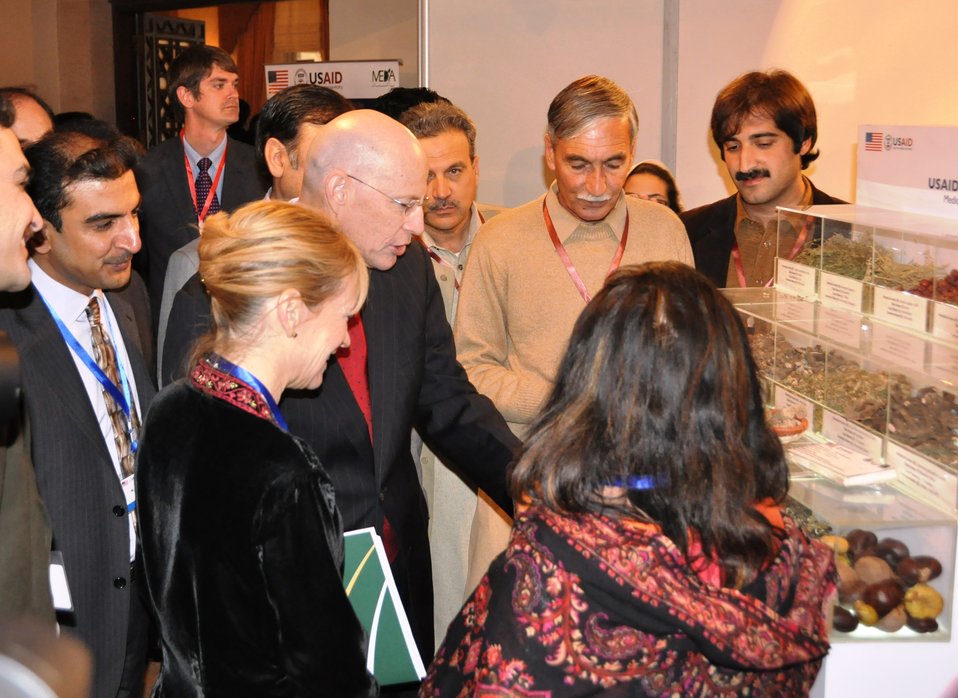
Industry Conference on Medicinal and Aromatic Plants and Honey by Entrepreneurs Project

USAID’s Mission Director, Gregory Gottlieb while interacting with Project beneficiaries of Medicinal and Aromatic Plants.